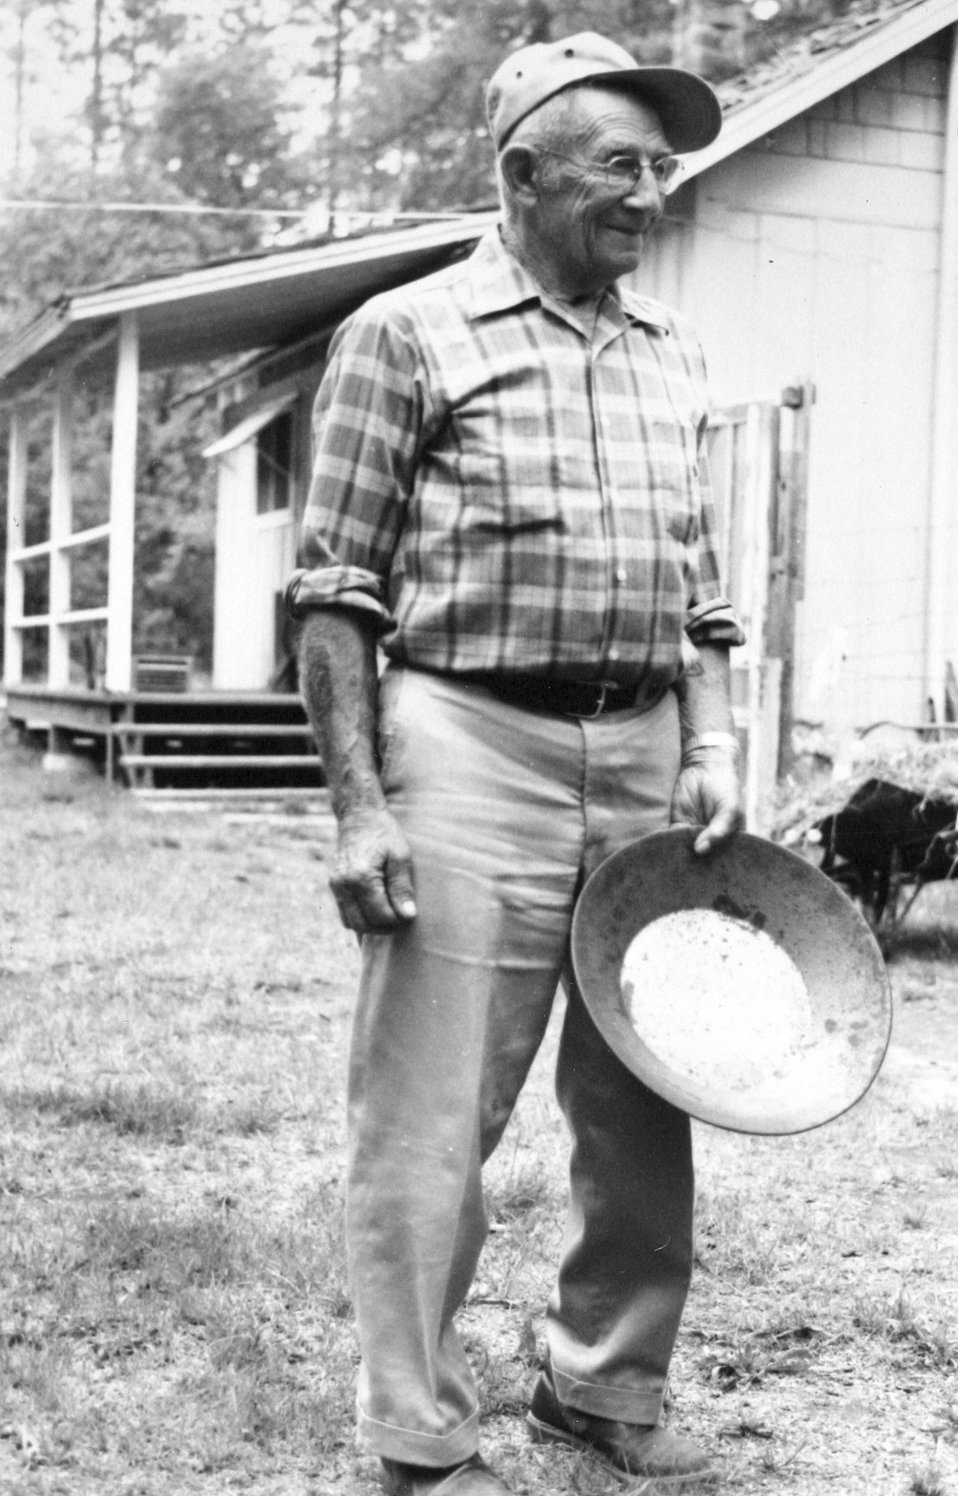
Lou Martin